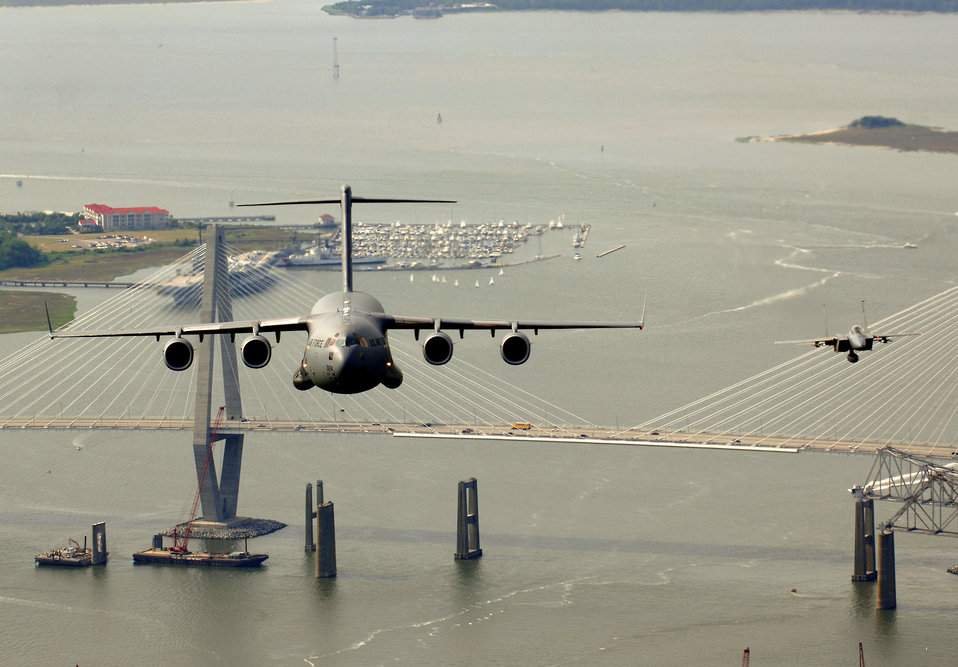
C-17s over Charleston

An F-15 Eagle from the 60th Fighter Squadron, Eglin Air Force Base , Fla., escorts a C-17 Globemaster III from the 14th Airlift Squadron, Charleston AFB, S.C., as they fly over the USS Yorktown and the Arthur J. Ravenel Jr. Bridge in the Charleston, S.C., area during a local training mission on Tuesday, May 16, 2006.